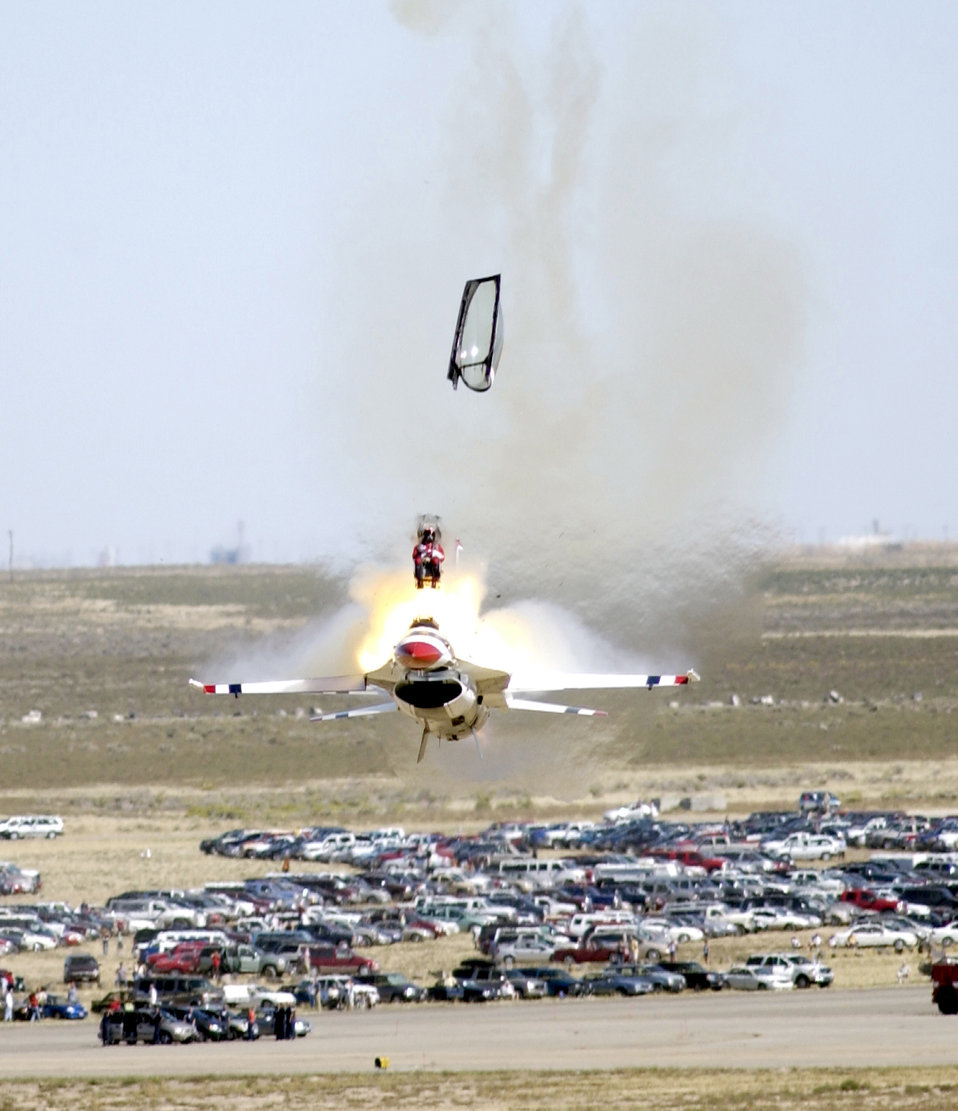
Split-second shot

MOUNTAIN HOME AIR FORCE BASE, Idaho -- Capt. Christopher Stricklin ejects from the USAF Thunderbirds number six aircraft less than a second before it impacted the ground at an air show at Mountain Home Air Force Base, Idaho, Sept. 14. Stricklin, who was not injured, ejected after both guiding the jet away from the crowd of more than 60,000 people and ensuring he couldn't save the aircraft. This was only the second crash since the Air Force began using F-16 Falcons for its demonstration team in 1982. The ACES II ejection seat performed flawlessly.